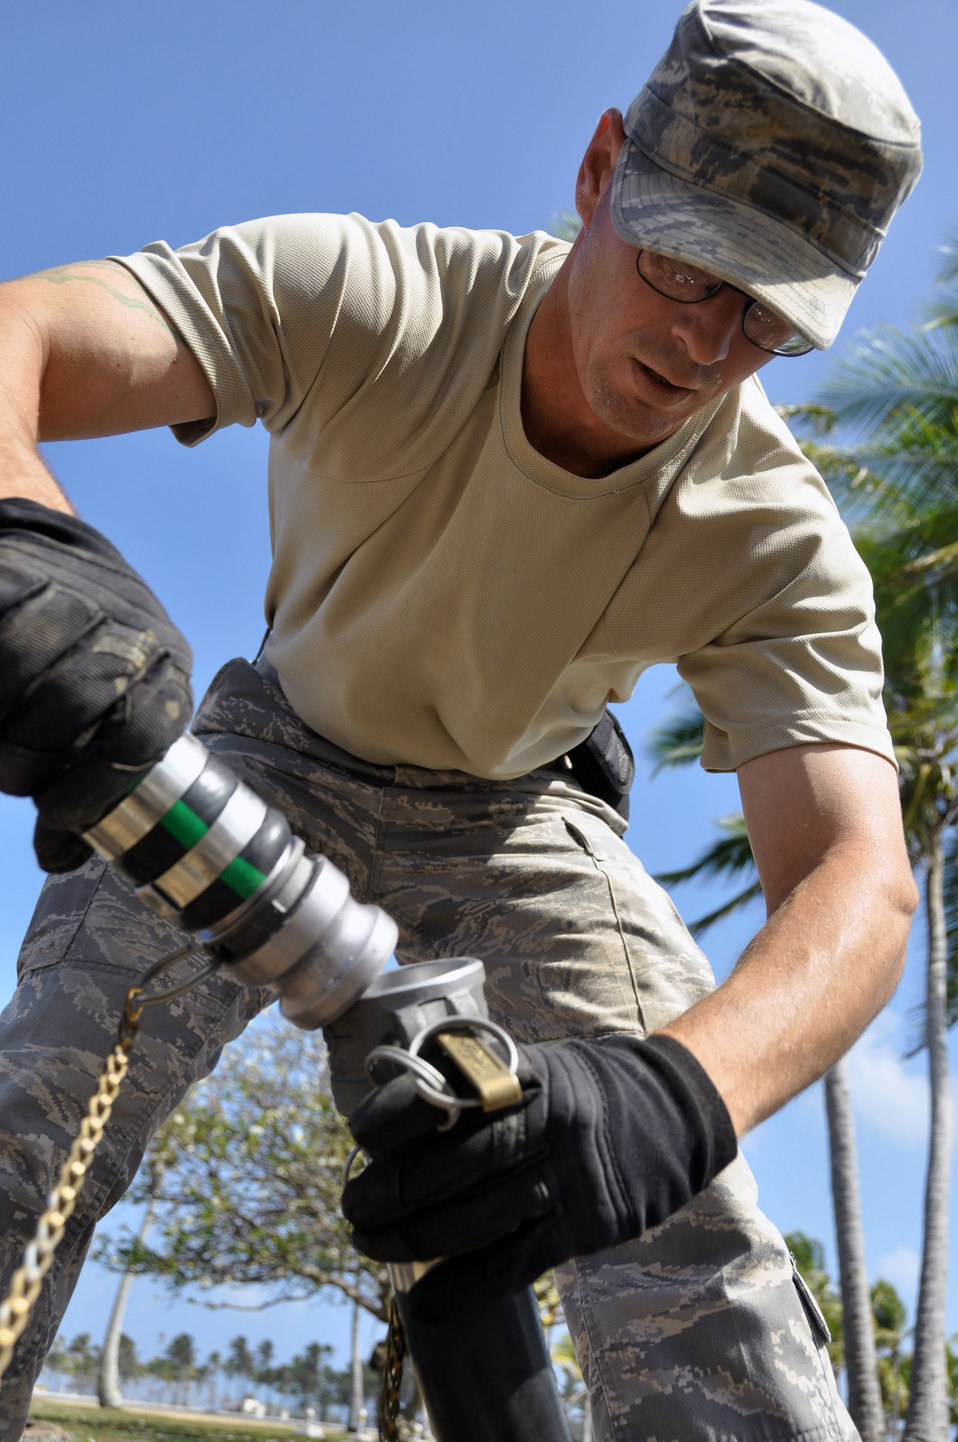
Airmen provide island residents with drinkable water

Staff Sgt. Kevin McKee connects water hose clamps in an effort to redistribute non-potable water through a reverse osmosis eater purification unit April 17 at Roi-Namur in the Marshall Islands. Sergeant McKee is an 18th Civil Engineer Squadron utility systems journeyman from Kadena Air Base, Japan.